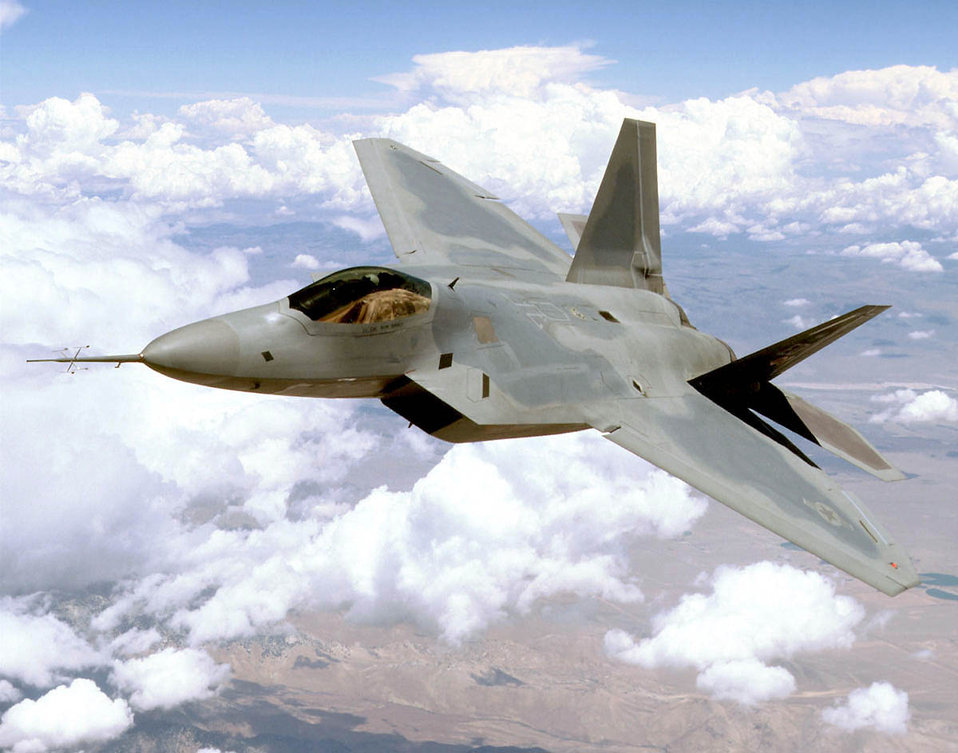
Raptor cruising

FILE PHOTO -- The F/A-22 is an air-superiority fighter with improved capability over current Air Force aircraft. From the inception of the battle, the F/A-22's primary objective will be to establish air superiority through the conduct of counter air operations. The F/A-22 also has an inherent air-to-surface capability. A combination of improved sensor capability, improved situational awareness, and improved weapons provides first-kill opportunity against the threat.